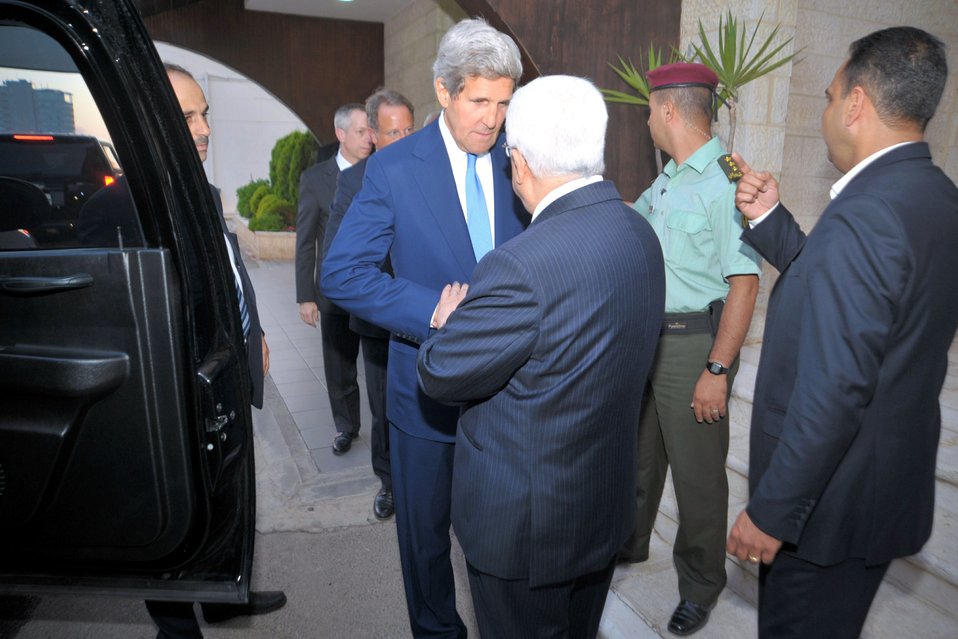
Secretary Kerry Bids Farewell to Palestinian Authority President Abbas

U.S. Secretary of State John Kerry bids farewell to Palestinian Authority President Mahmoud Abbas in Ramallah, West Bank, following Middle East peace negotiations on July 19, 2013.